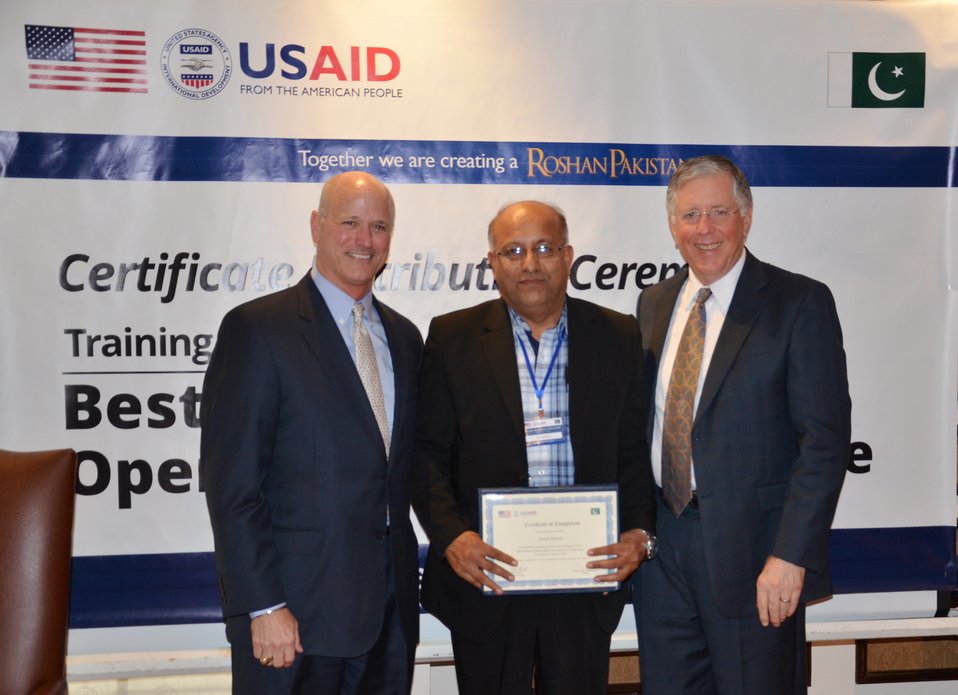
Tim Moore, Acting Director USAID Energy Office and Jimmy Hicks, Chief of Party, Energy Policy Program giving certificate to Mr. Tanzil Rahim of Guddu Thermal Power Station.